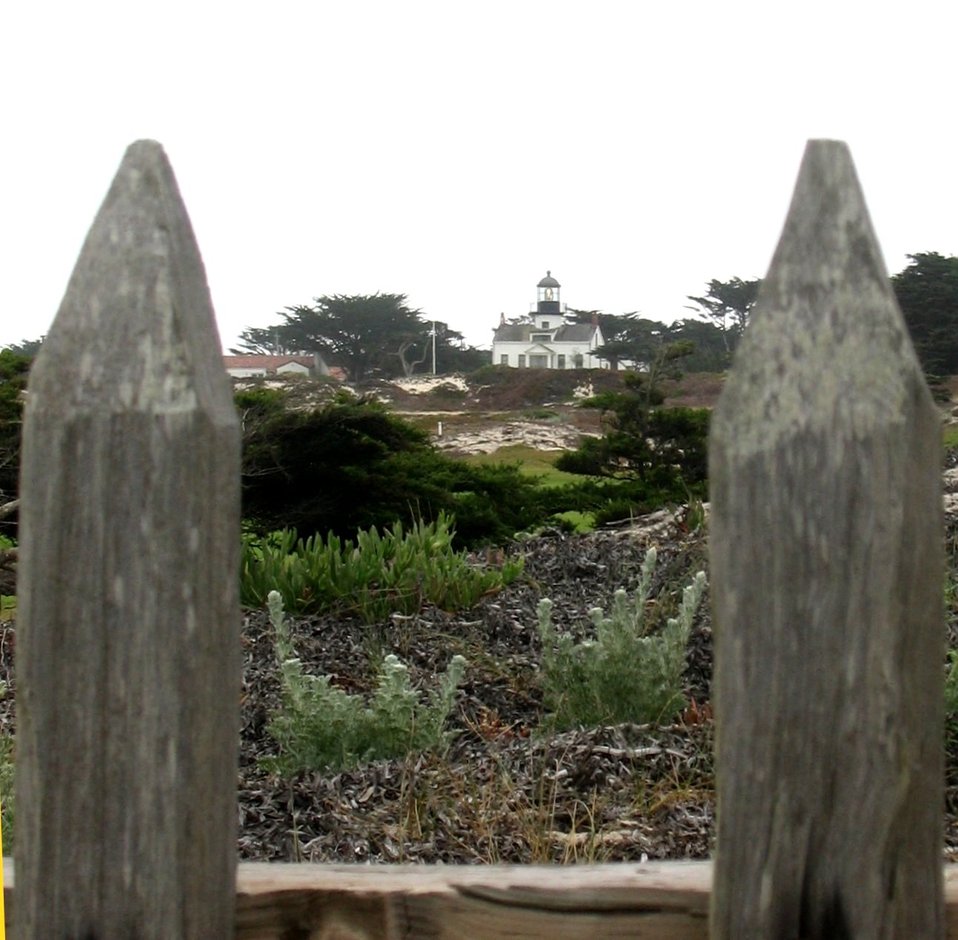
The Point Pinos Lighthouse bracketed between fence posts on the Asilomar Dunes.